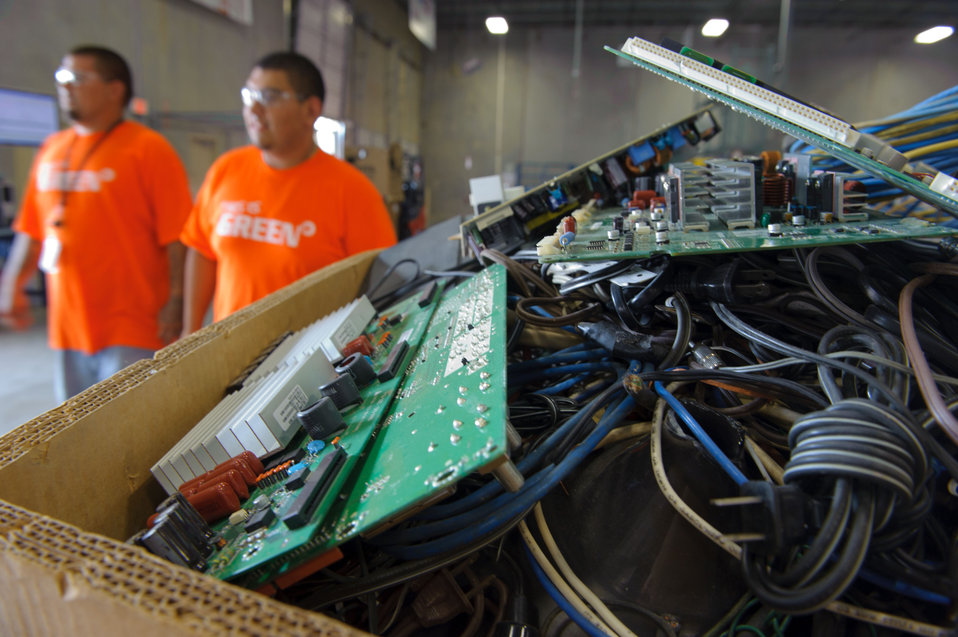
July 20, 2011 - What is e-waste?

Every year, Americans generate almost 2.5 million tons of used electronics, which are made from valuable resources such as precious metals and rare earth materials, as well as plastic and glass.

To download this image:
1. Right-click the image and under 'View all sizes,' choose 'original'
2. Select the link to 'Download the original size of this photo'